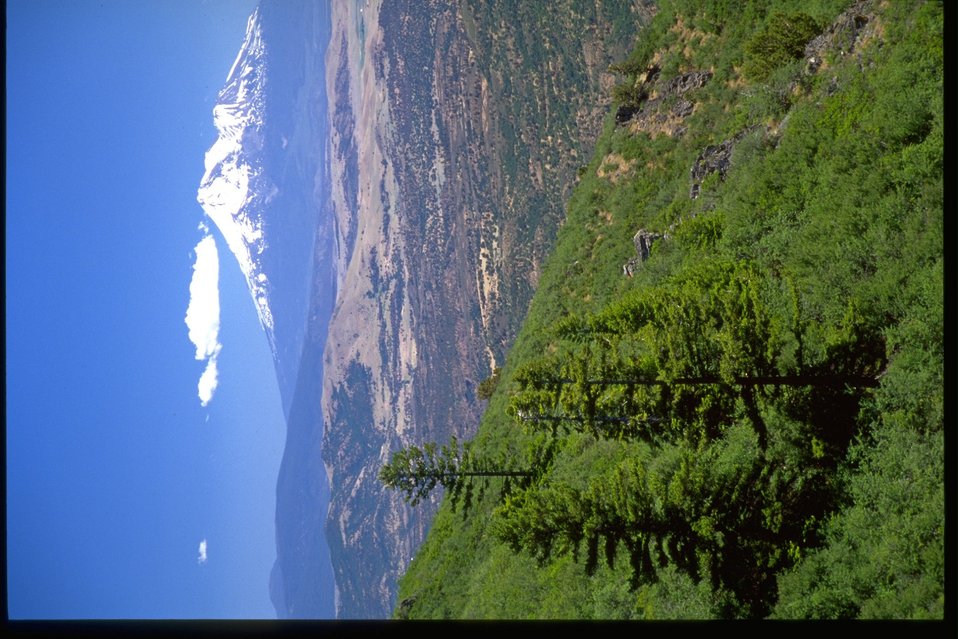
Scenic shot of Mount Shasta from Boccard Point, Soda Mountain.